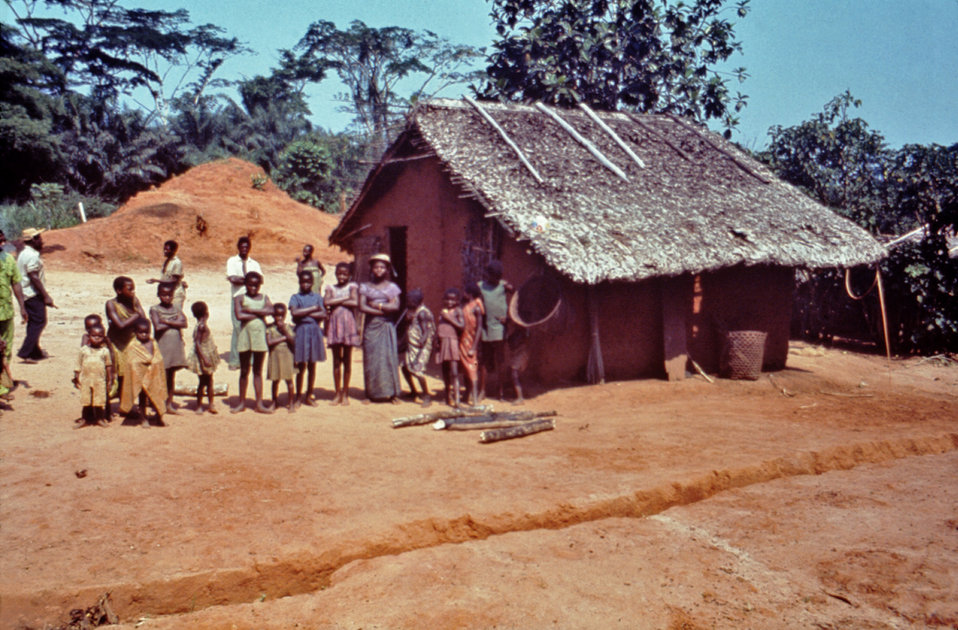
This photograph of a Yambuku, Zaire (now Democratic Republic of the Congo) community, showed residents who were being examined by CDC EIS officers during the Ebola outbreak of 1976.